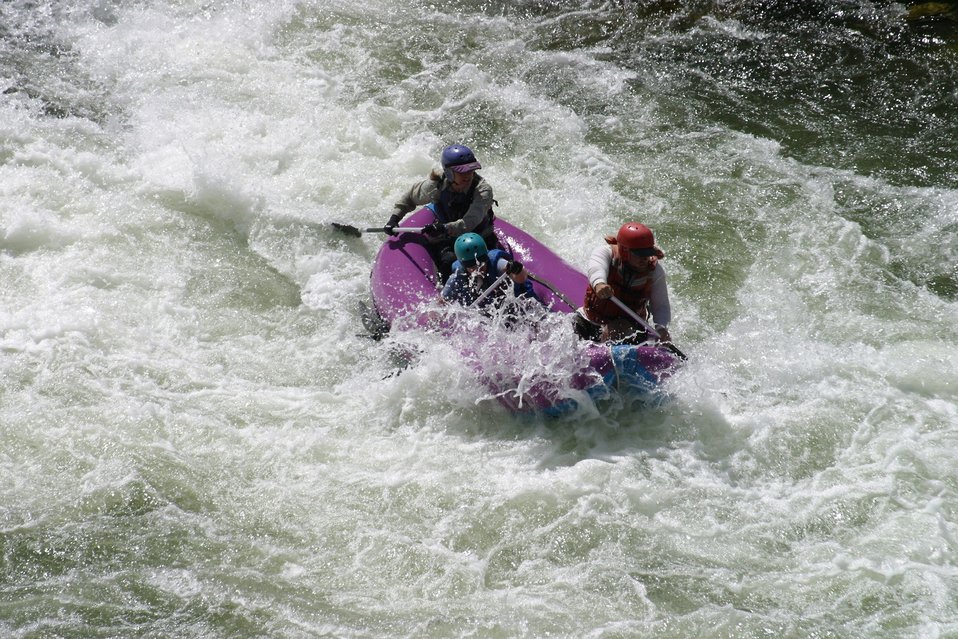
Boater at Grave Creek Falls